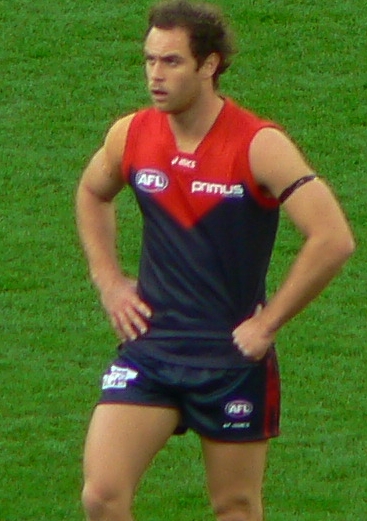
Jace Bode, Australian rules footballer